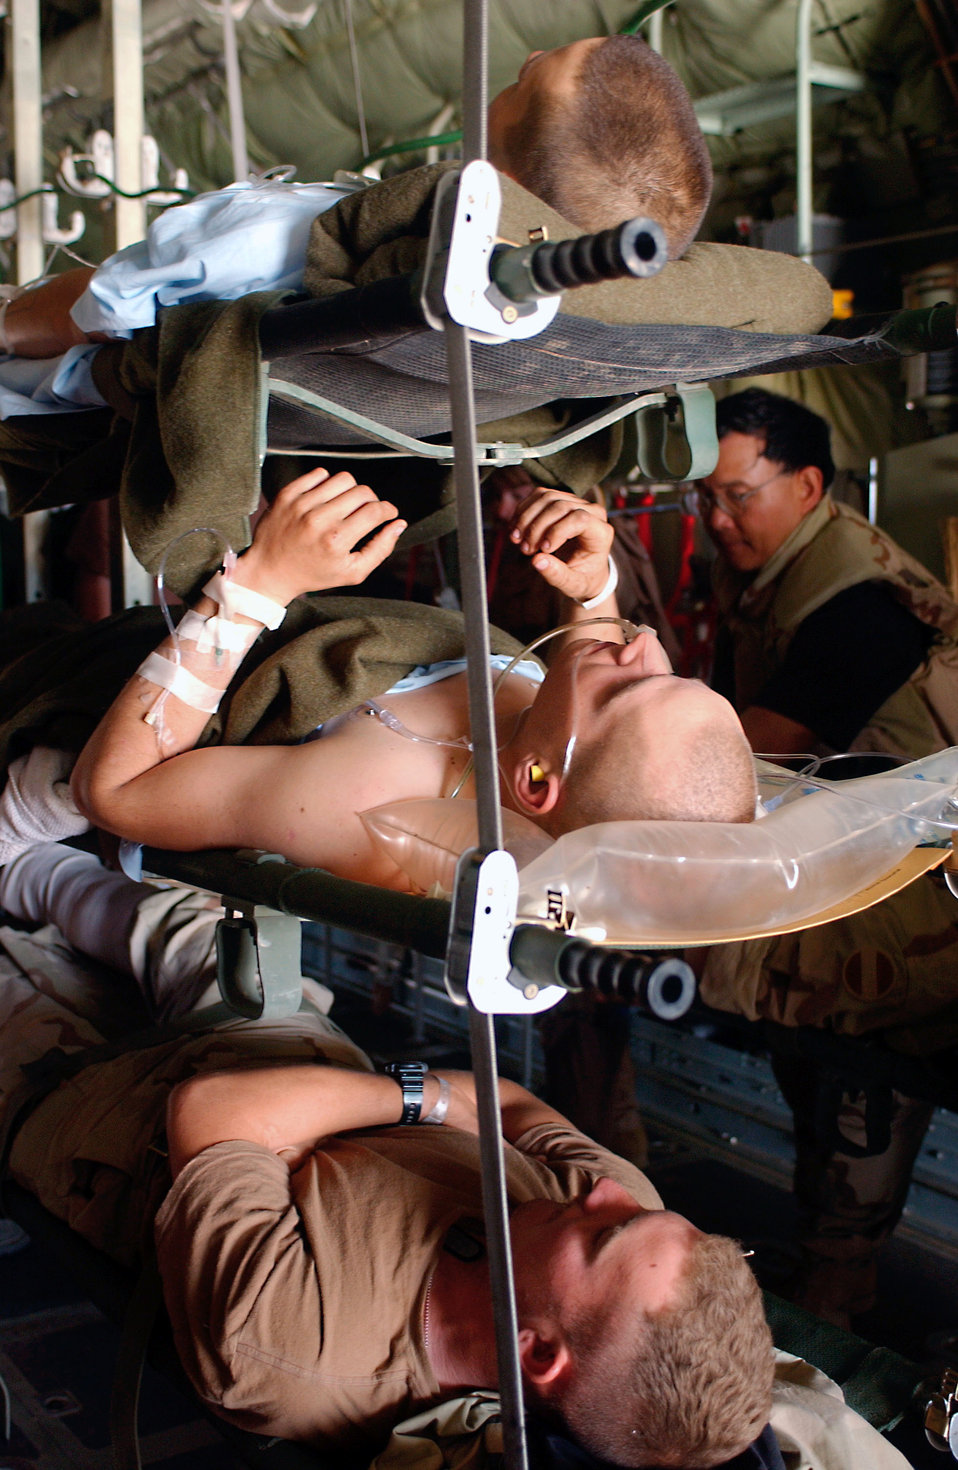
Airlifting the wounded

OPERATION IRAQI FREEDOM -- Wounded U.S. Army soldiers are loaded onto a C-130 Hercules at Baghdad International Airport on April 22. The airport is a primary base of operations for U.S. troops, cargo and humanitarian airlift in Iraq.